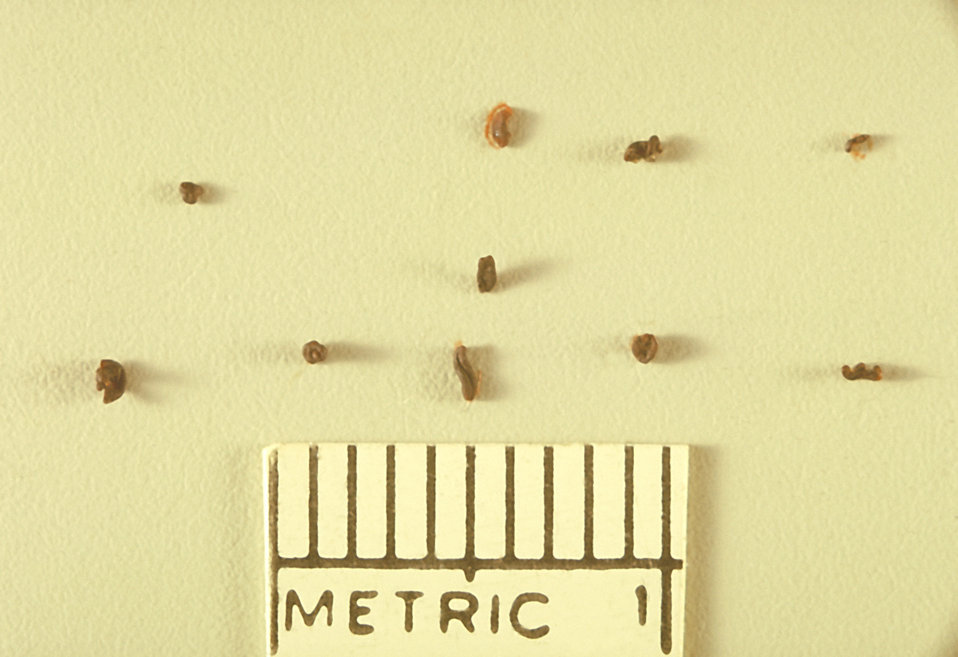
This image shows various sized granules of the fungus Madurella grisea.